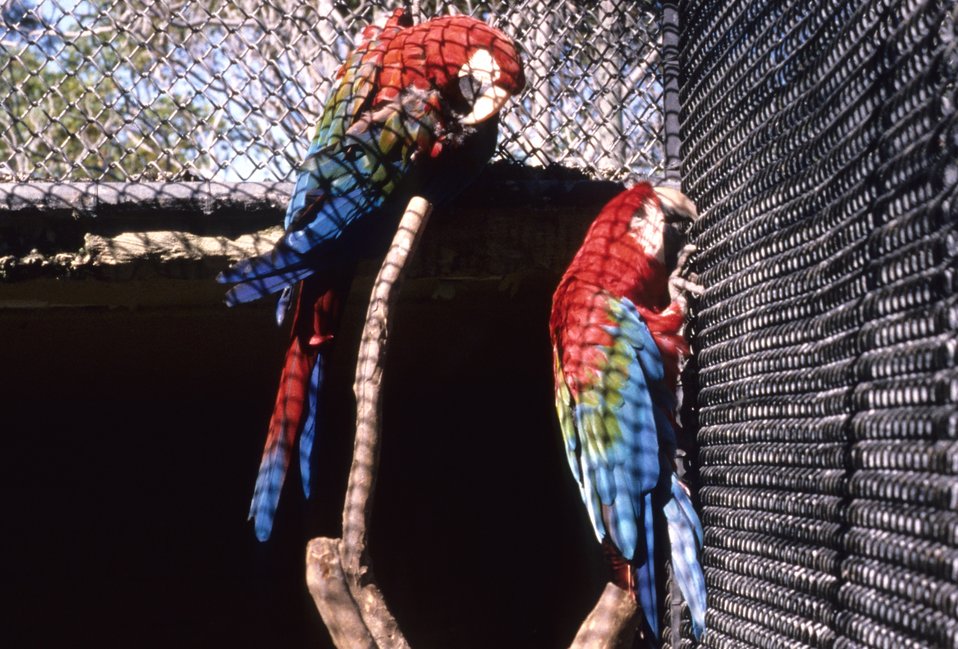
Green-winged macaws (Ara chloroptera).